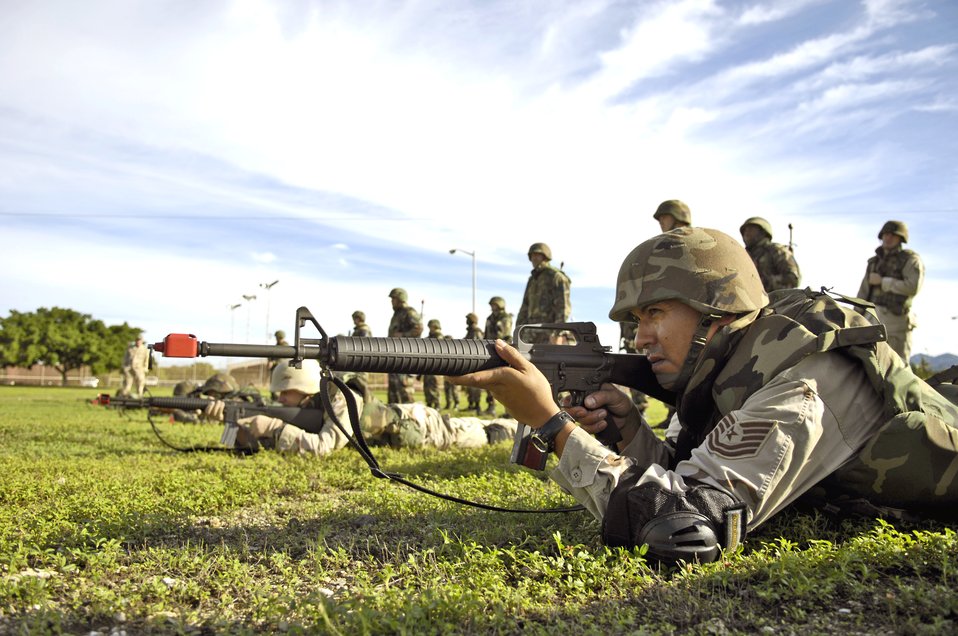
Combat course prepares Airmen for AEF

Airmen from the 15th Airlift Wing practice their individual movement techniques Nov. 3 during a 3-day Expeditionary Combat Skills Training course at Hickam Air Force Base, Hawaii. The Airmen are preparing for the Air Expeditionary Force 5/6 cycle.